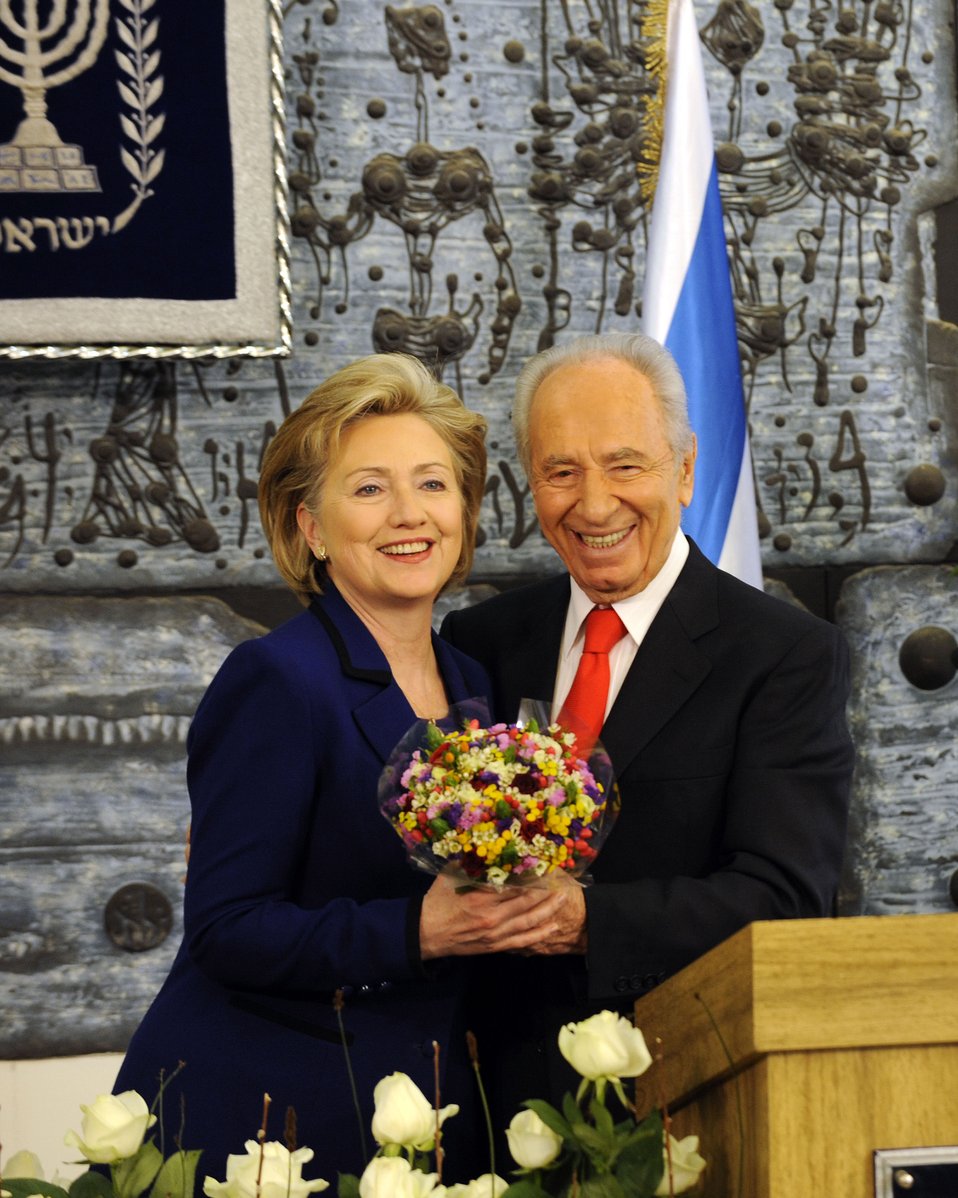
Secretary Clinton With President of Israel

U.S. Secretary of State Hillary Rodham Clinton with the President of Israel, Shimon Peres, at the President's Residence, Jerusalem March 3, 2009.